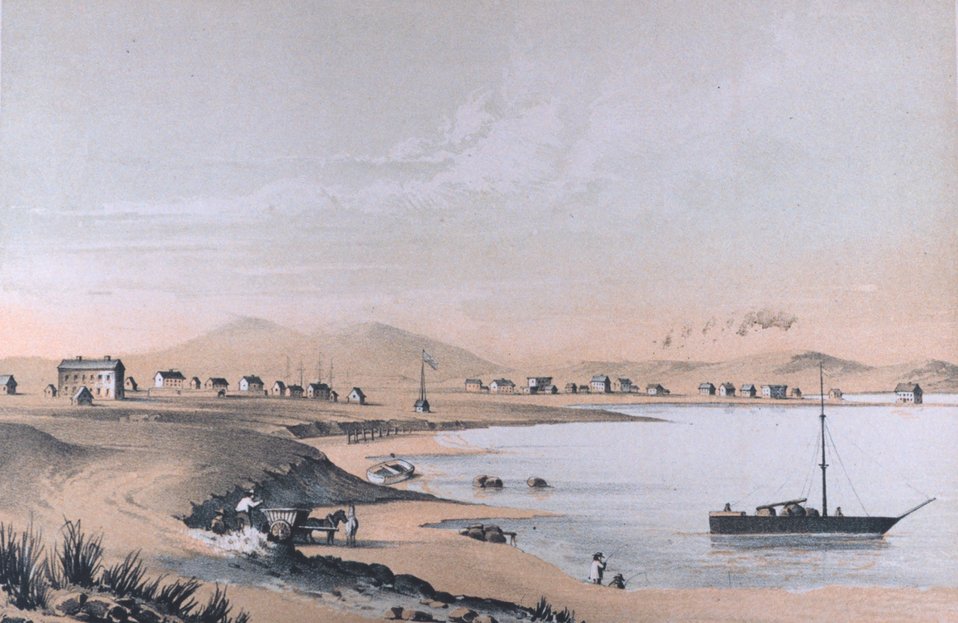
'View of Benicia from the West', frontispiece. In: Reports of Explorations and Surveys .... Vol. 5. Commonly known as Pacific Railroad Surveys. Call Number F593 .U58.